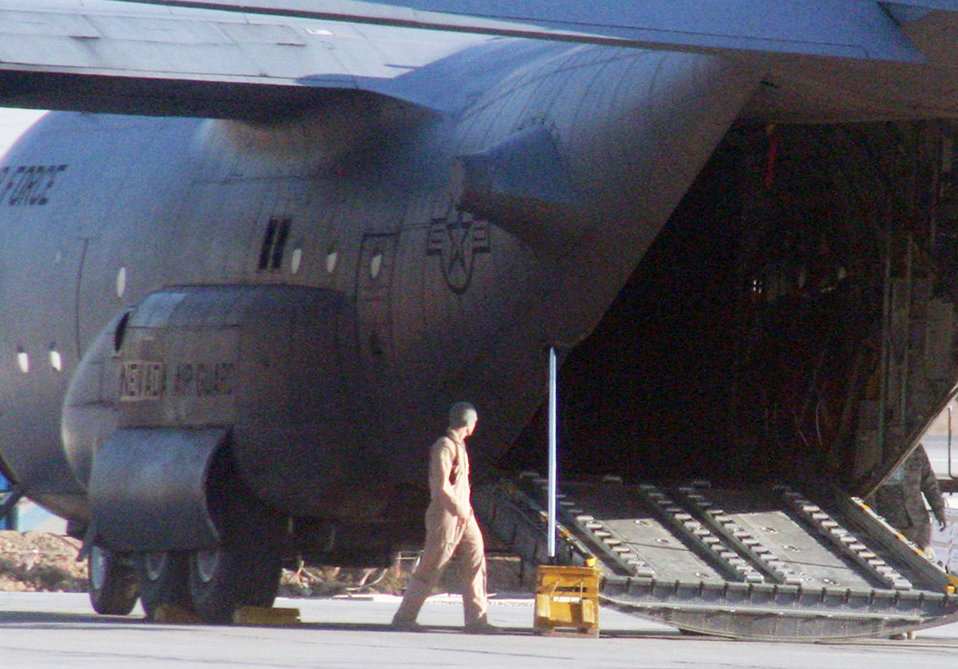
Christmas mission

An aircrew member prepares a C-130 Hercules for departure during airlift operations at Bagram Airfield, Afghanistan, Dec. 25, 2009. The C-130 was on an airlift mission for Operation Enduring Freedom.